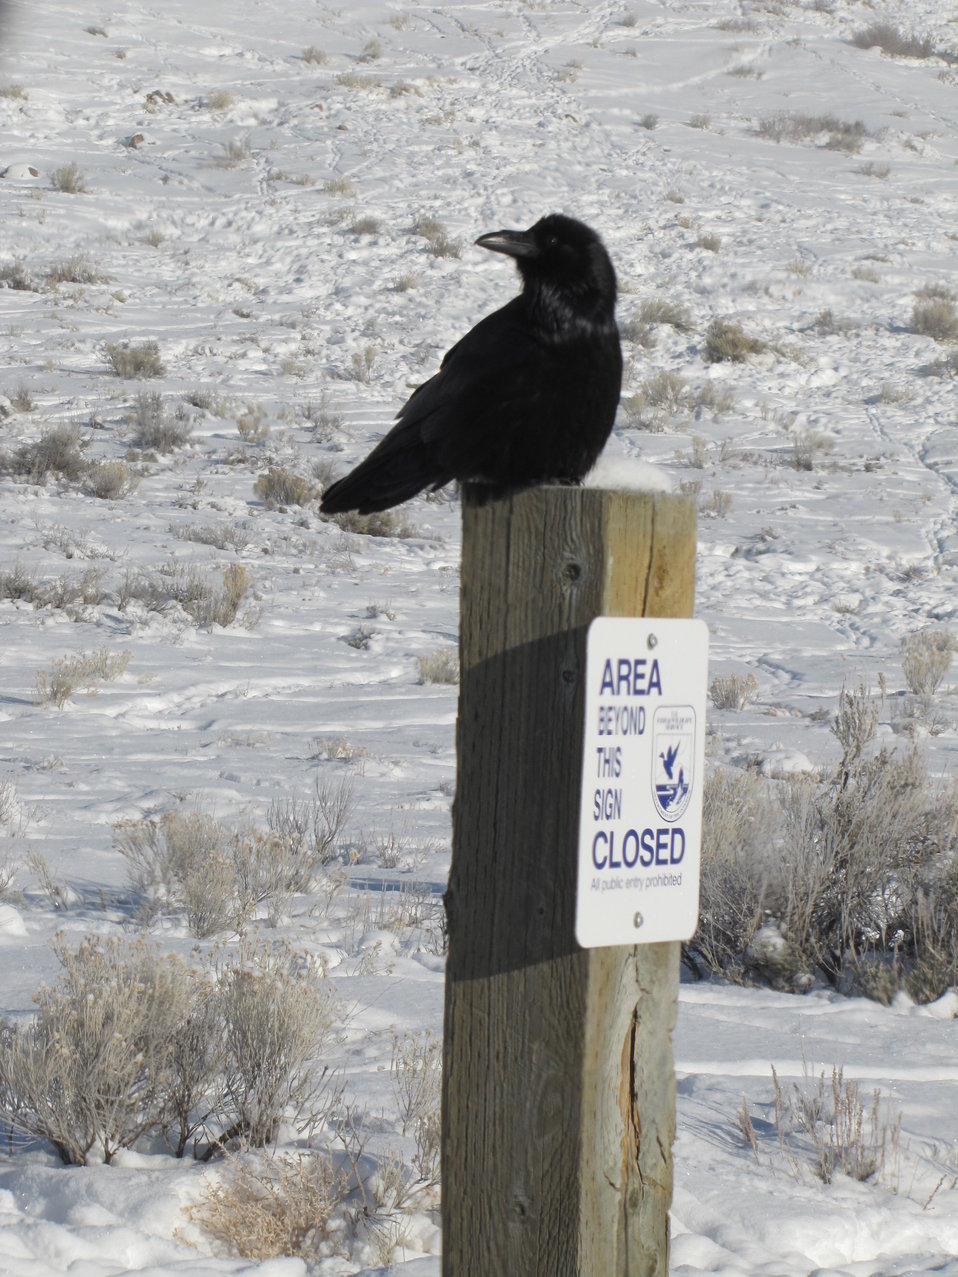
Standing Guard or Pushing the Limit?

A raven positions itself on a National Elk Refuge boundary post near the Refuge Road. Bighorn sheep tracks can be seen in the background.